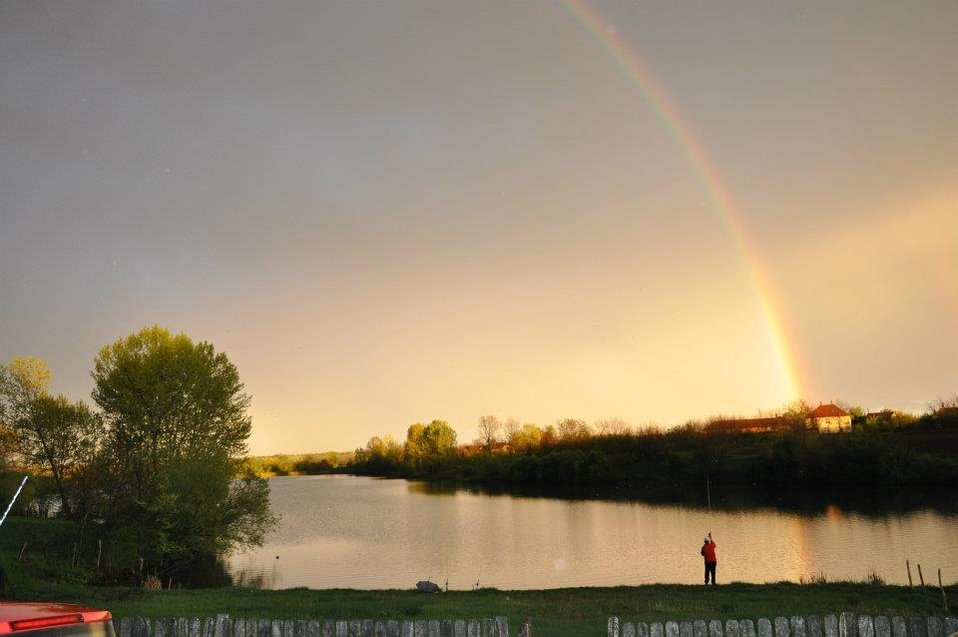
Српски / srpski: Rabrovačko jezero
Лиценца Public domain Public domain false false I, the copyright holder of this work, release this work into the public domain. This applies worldwide.
In some countries this may not be legally possible; if so:
I grant anyone the right to use this work for any purpose, without any conditions, unless such conditions are required by law. Public domain Public domain false false